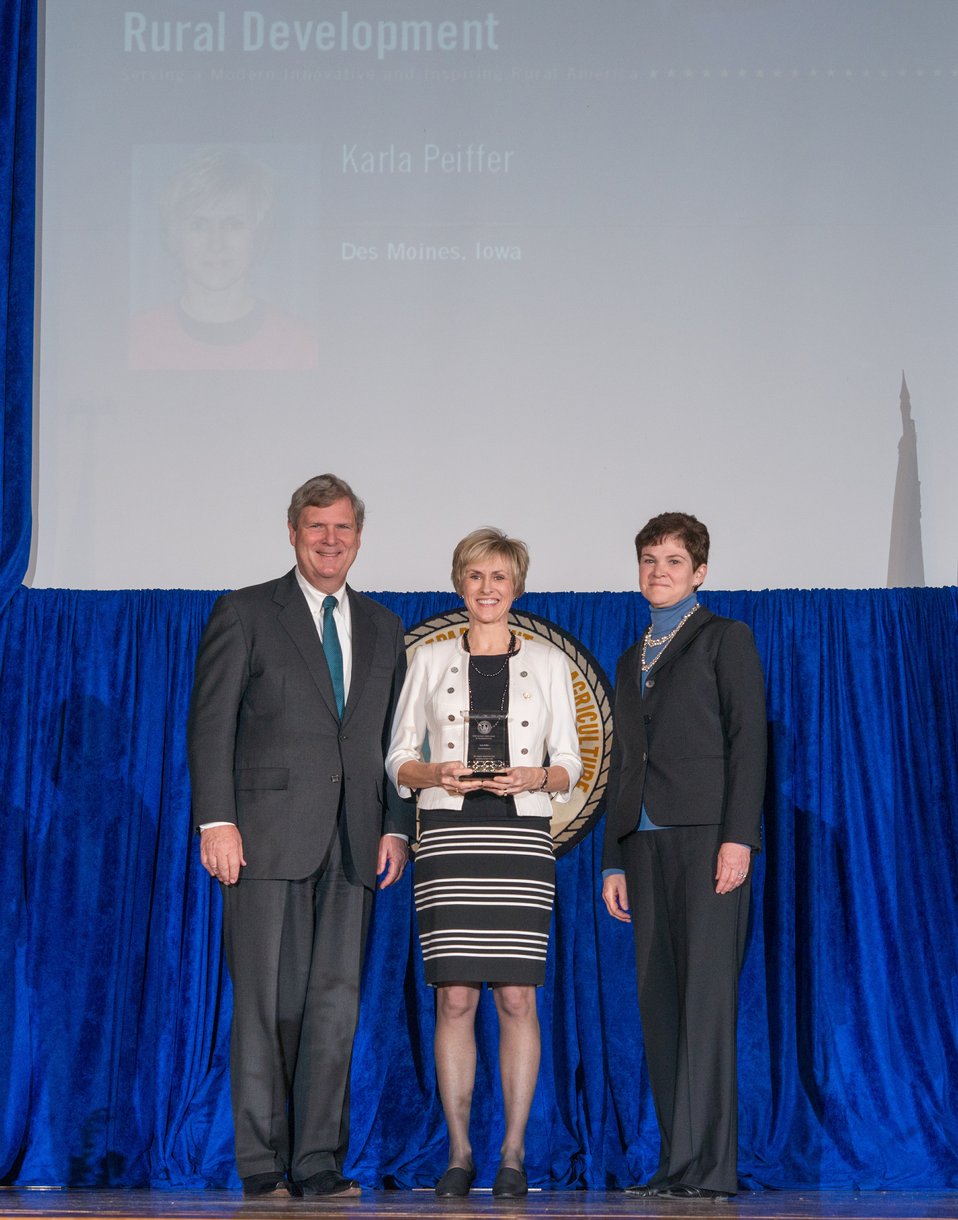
Agriculture Secretary Tom Vilsack and Agriculture Deputy Secretary Krysta Harden present the Secretary's Honors Award to Rural Development (RD) from Des Moines, IA Karla Peiffer for her efforts related to the restructuring of a U.S. Department of Agriculture (USDA) Rural Utility loan that prevented unprecedented rate increases for thousands of residents at the 2013 Honor Awards in the Jefferson Auditorium at USDA in Washington, D.C. on Wednesday, Dec. 11, 2013.